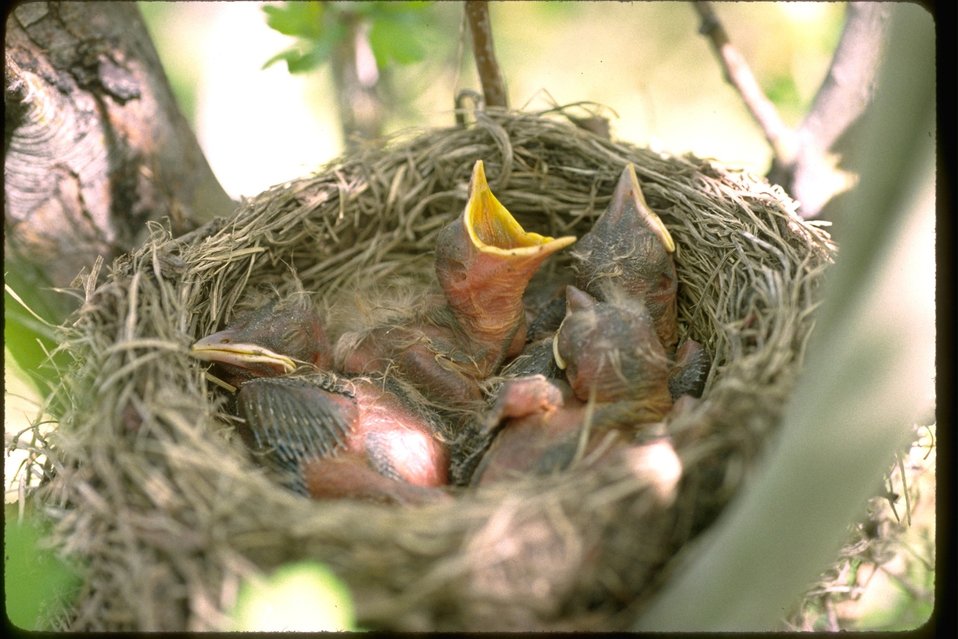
Robin chicks in nest near Hines, Oregon, in Harney County.